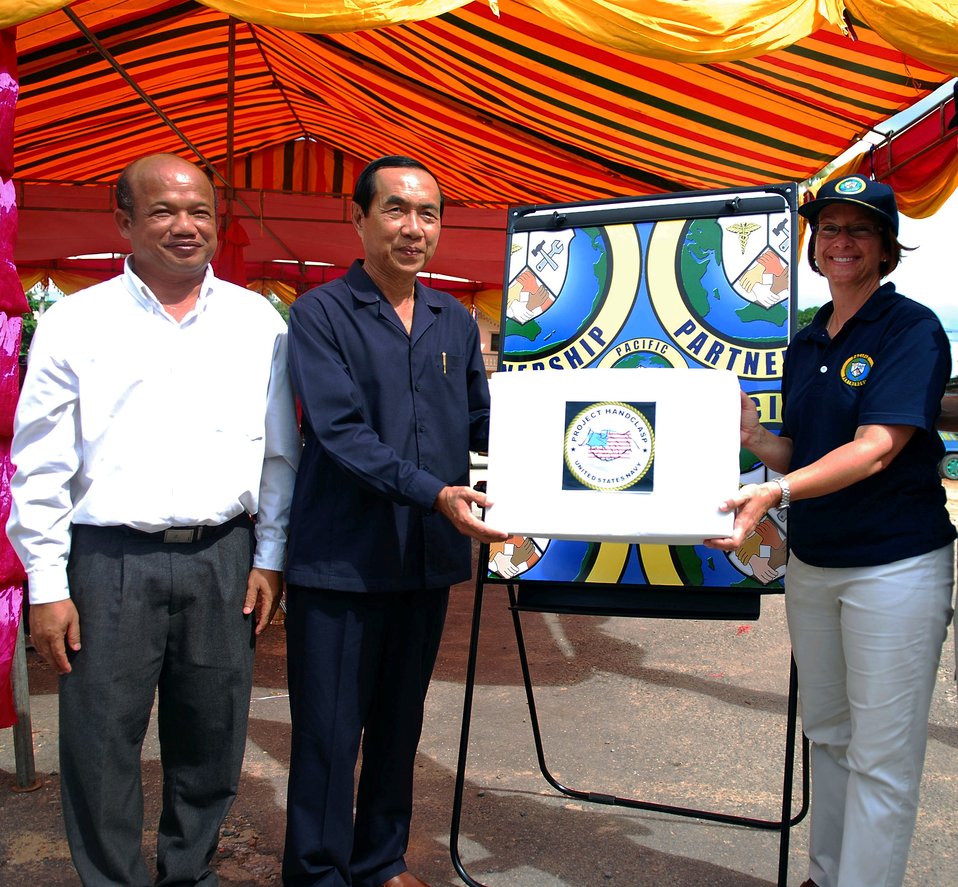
PP2010 Commander Capt. Lisa M. Franchetti Holds a Box of Medical Supplies

Commander of Pacific Partnership 2010, Capt. Lisa M. Franchetti, holds a box of medical supplies donated on behalf of Project Handclasp and Latter-day Saint Charities to Cambodian health officials during a ceremony in Sihanoukville, Cambodia, highlighting the delivery of 32 pallets of medical kits to the Cambodian people on June 26, 2010. The Military Sealift Command hospital ship USNS Mercy (T-AH 19) is in Cambodia for Pacific Partnership 2010, the fifth in a series of annual U.S. Pacific Fleet humanitarian and civic assistance endeavors designed to strengthen regional partnerships.